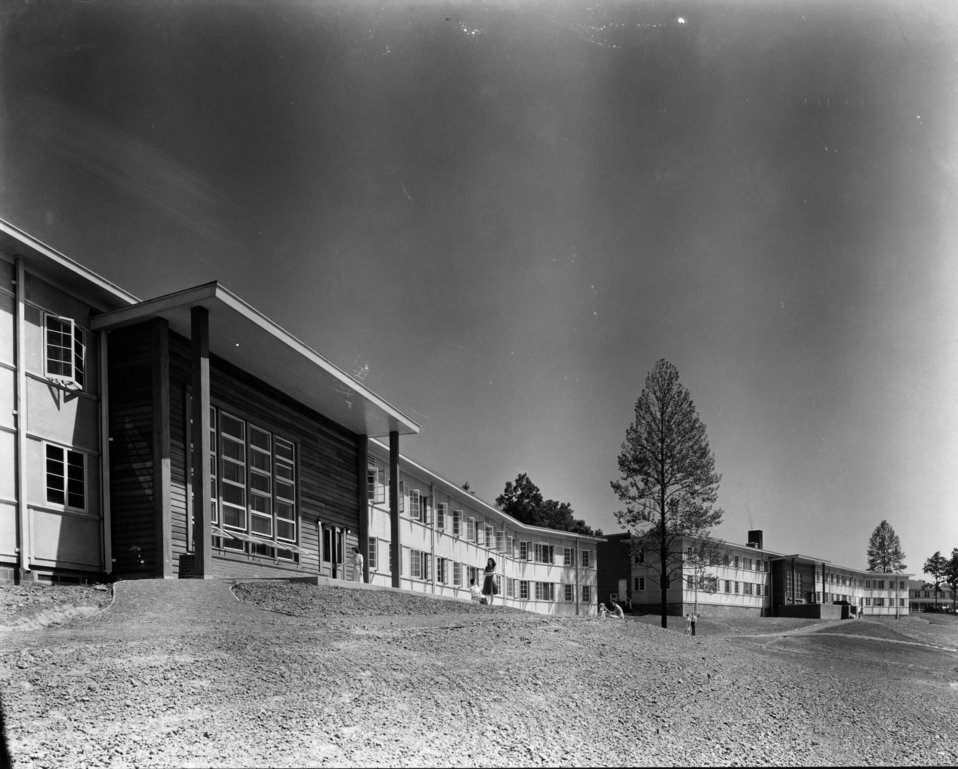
Housing at Oak Ridge